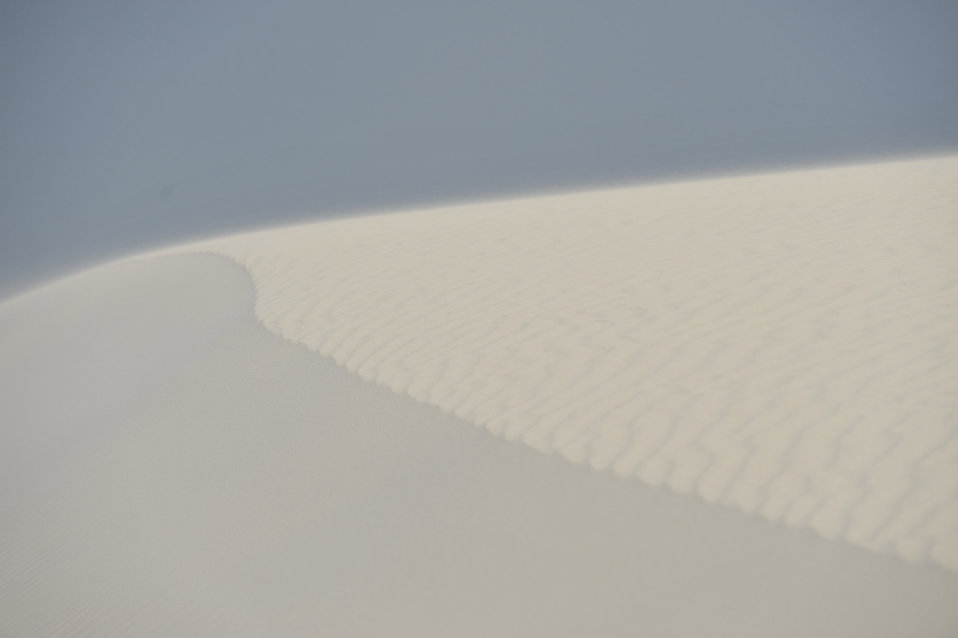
Windy at white sands

White sands national monument,new mexico.